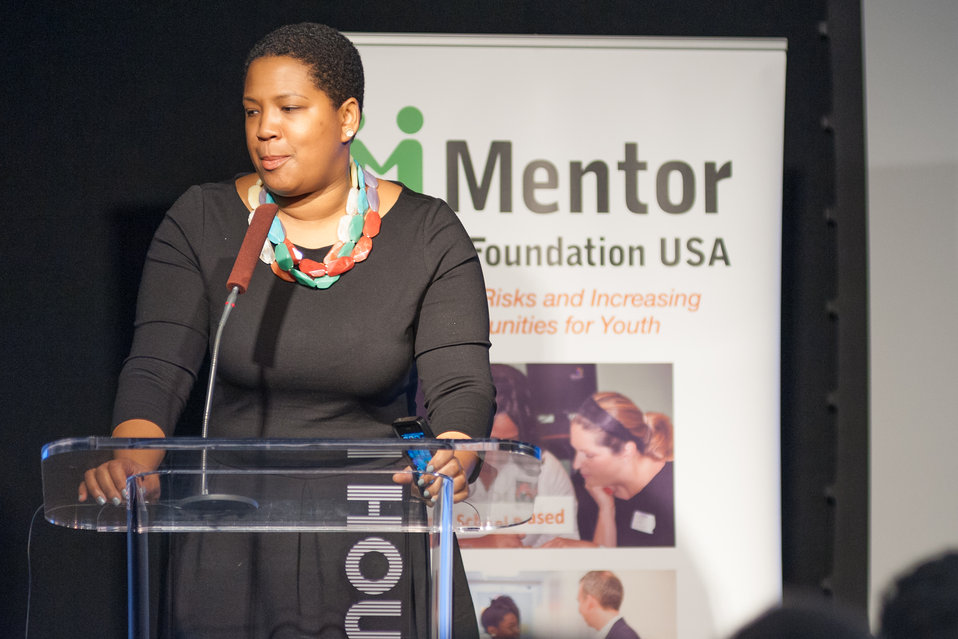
Mentor NDFW Event 2014

Mentor Foundation USA, in partnership with the National Institute on Drug Abuse (NIDA) and other key partners hosted a Youth Drug Facts Rally at the House of Sweden on Thursday, 30th January 2014. Approximately 200 students from five local high schools attended and had the opportunity to interact with top U.S. scientific experts, and inspiring guest speakers to “shatter the myths” about drugs and substance abuse, while pledging to stay drug-free.